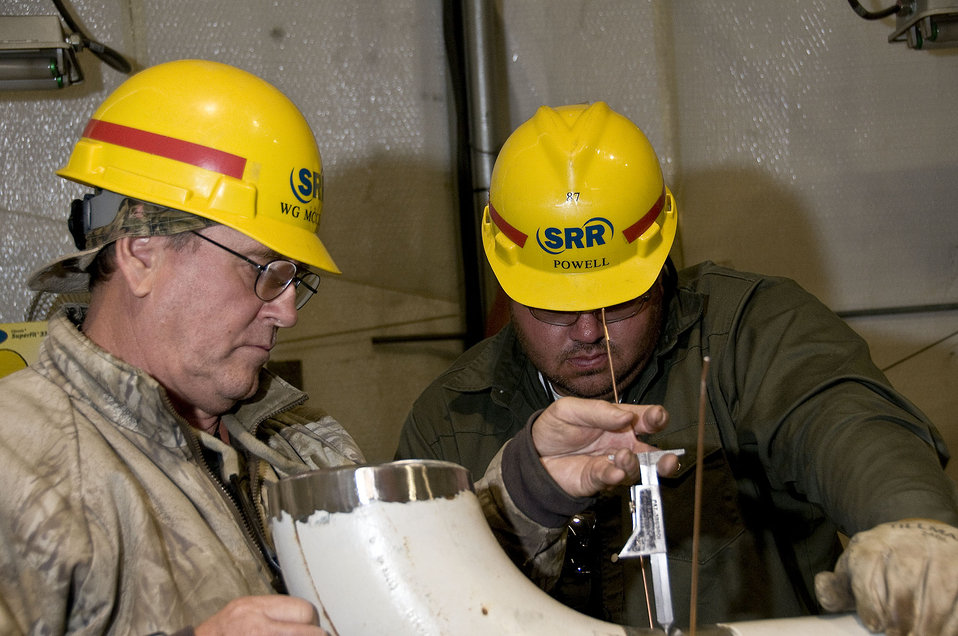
Recovery Act Workers Develop Skills for Careers in Nuclear Industry

Recovery Act workers perform work to upgrade an underground waste storage tank at the Savannah River Site.